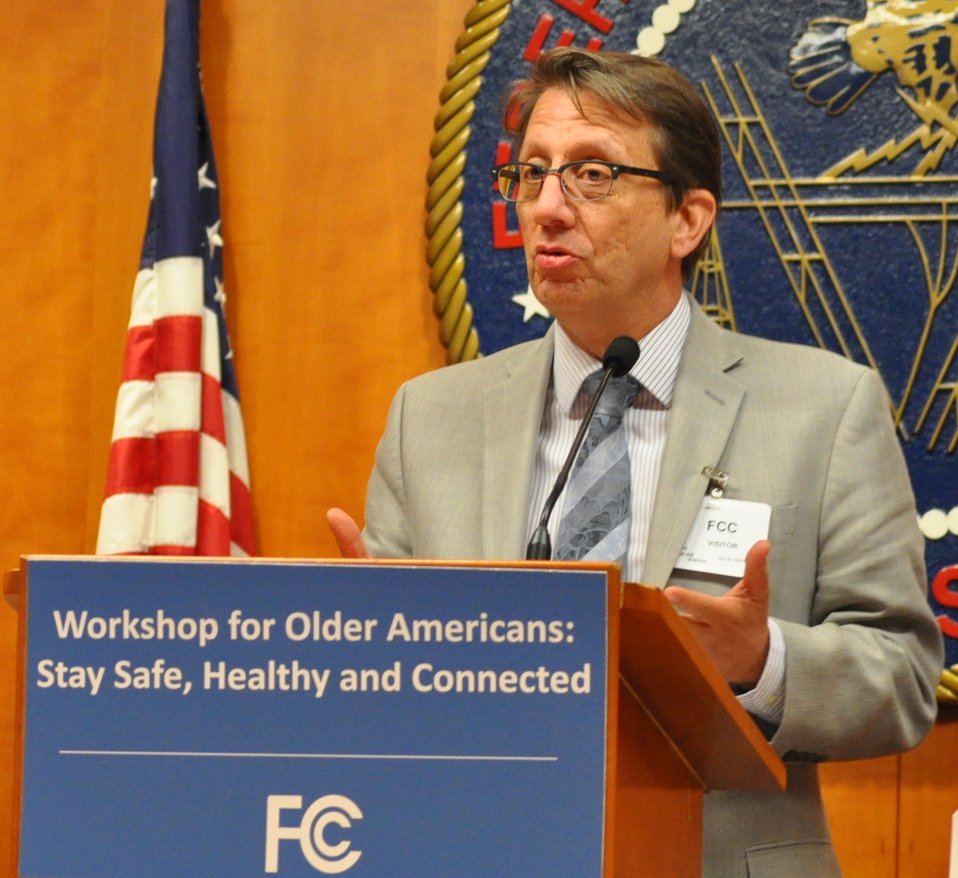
5.22.2014 Workshop for Older Americans: Stay Safe, Healthy and Connected

Dr. Thomas F. Klobucar, Deputy Director, Office of Rural Health, Veterans Health Administration